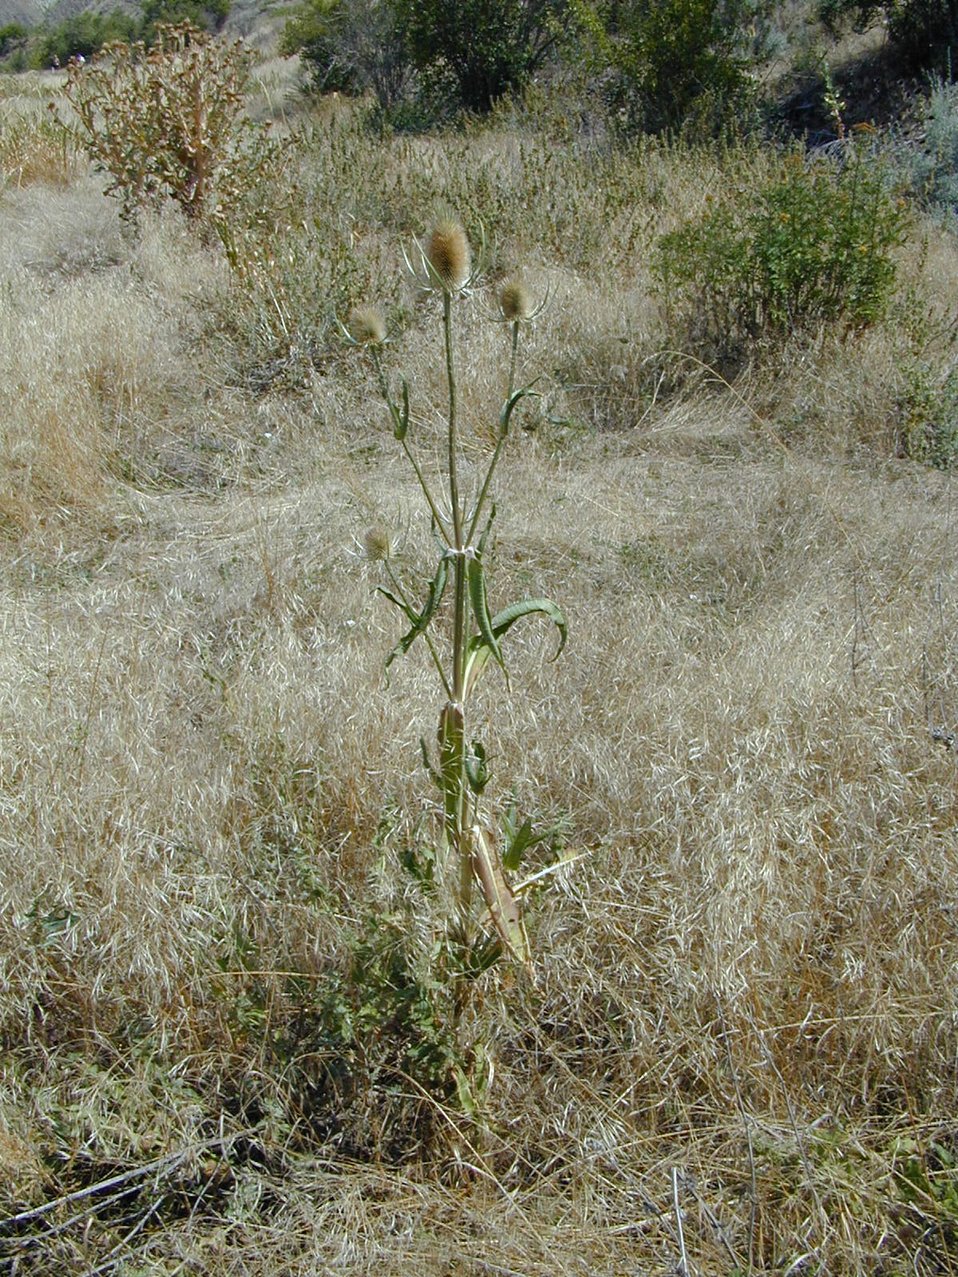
Tealsel Cottonwood Field Office UCSC Upper Columbia Salmon Clearwater District